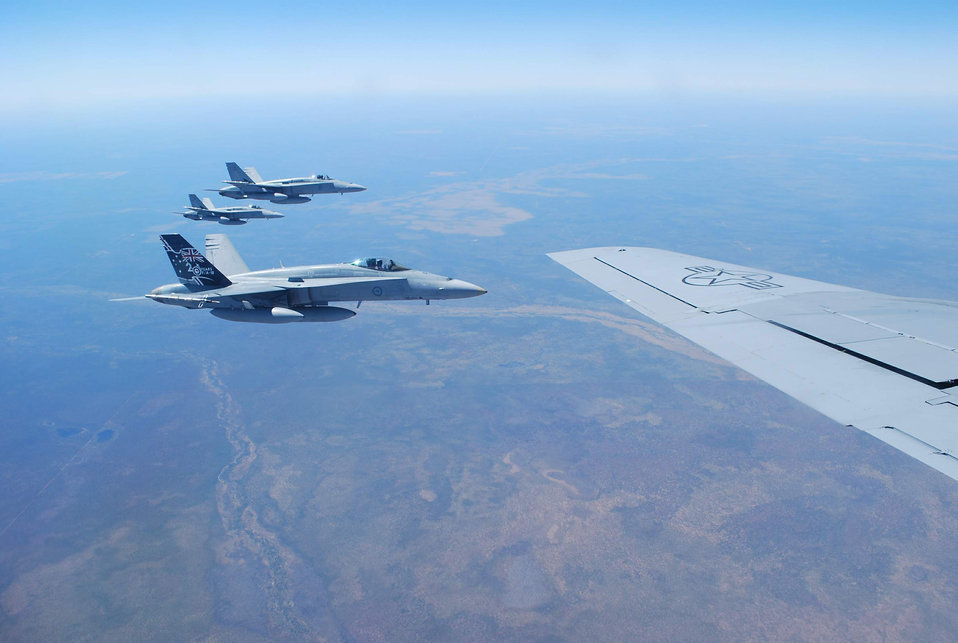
Airmen keep exercise participants flying high down under

Three Royal Australian Air Force F-18s fly in formation alongside a KC-135 Stratotanker during Exercise Talisman Saber 2009 July 19 over Australia. The RAAF fighters received fuel from the KC-135 in order to continue a mock air war designed to improve combat readiness and interoperability between Australian and U.S. forces. The KC-135 is from the 909th Air Refueling Squadron from Kadena Air Base, Japan.